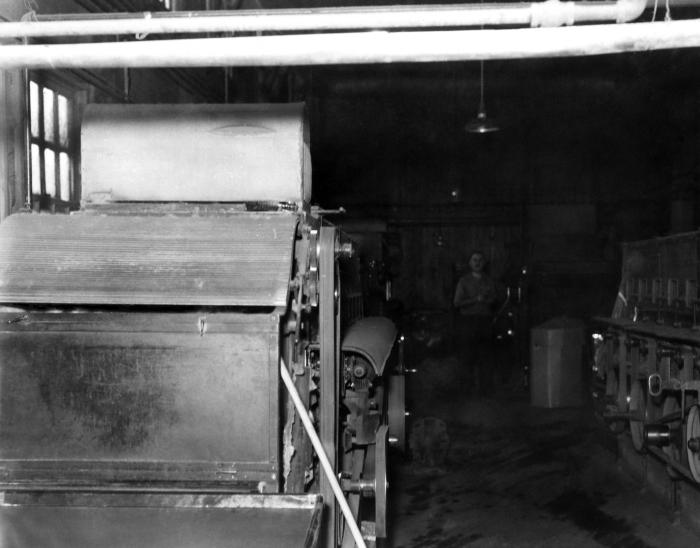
Provided by the Center for Disease Control's (CDC), National Institute for Occupational Safety and Health (NIOSH), this historic image, shot inside a Connecticut hat manufacturing plant, depicted one of the machines used in the fur hatters' industry. Being that the manufacturing process involves the use of mercury nitrite, if precautions were not taken, such as wearing a filtered breathing mask, or gloves, mercury exposure was quite likely, and could have lead to heavy metal poisoning, with severe pathologic neurological consequences. Note that the man in the background was not wearing a protective filtered breathing mask.